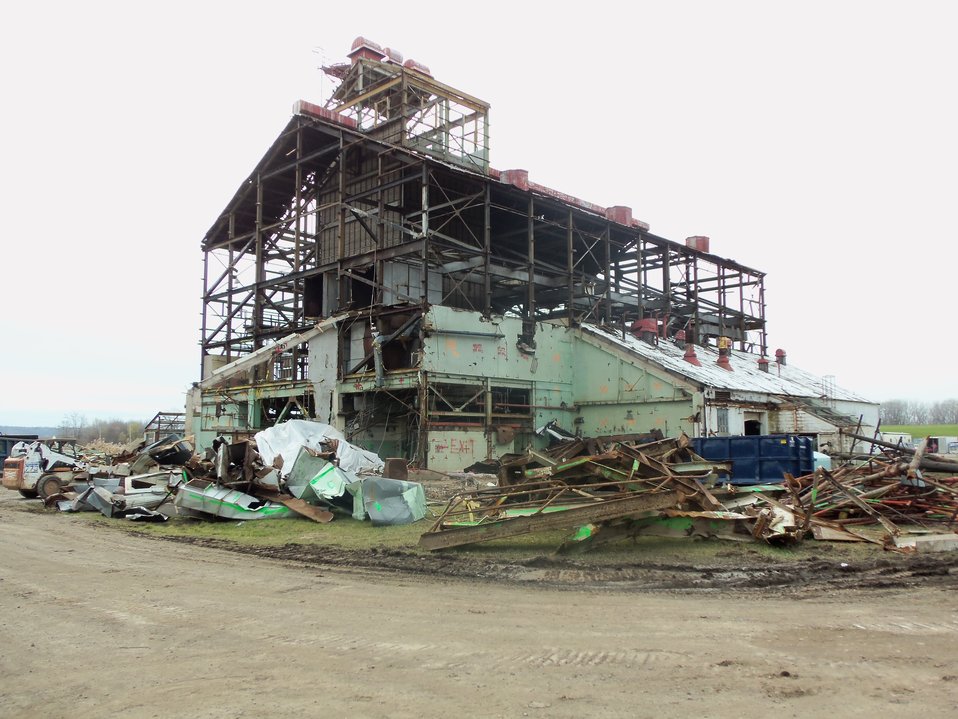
Building 401 shell with debris.
Activities from the Niagara Falls Storage Site, which is associated with the former Lake Ontario Ordnance Works. Formerly Utilized Sites Remedial Action Program (FUSRAP), a program initiated in 1974 to identify, investigate and clean up or control sites that were part of the Nation's early atomic energy and weapons program. Activities at the sites that are eligible for FUSRAP were conducted by Manhattan Engineer District (MED) or the Atomic Energy Commission (AEC), both predecessors of the Department of Energy (DOE). The U.S. Army Corps of Engineers was assigned management of FUSRAP by Congress in 1997.